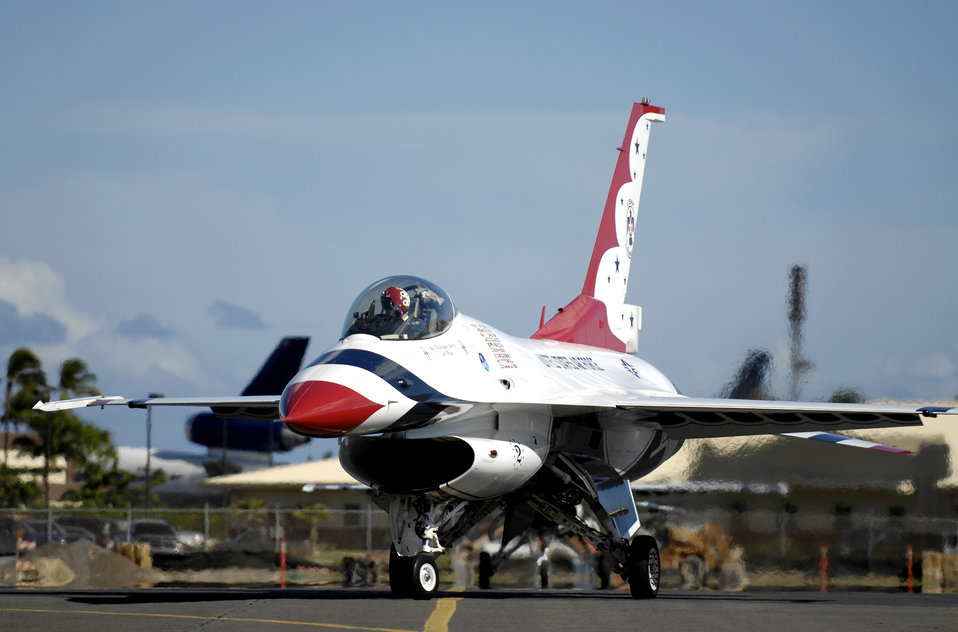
Thunderbirds arrive for Air Force Week Honolulu

A Thunderbird taxies to its parking spot during an arrival ceremony Sept. 12 at Hickam Air Force Base, Hawaii. The Thunderbirds, the Air Force Air Demonstration Squadron, are performing as part of Air Force Week Honolulu, which runs Sept. 8 through 15.